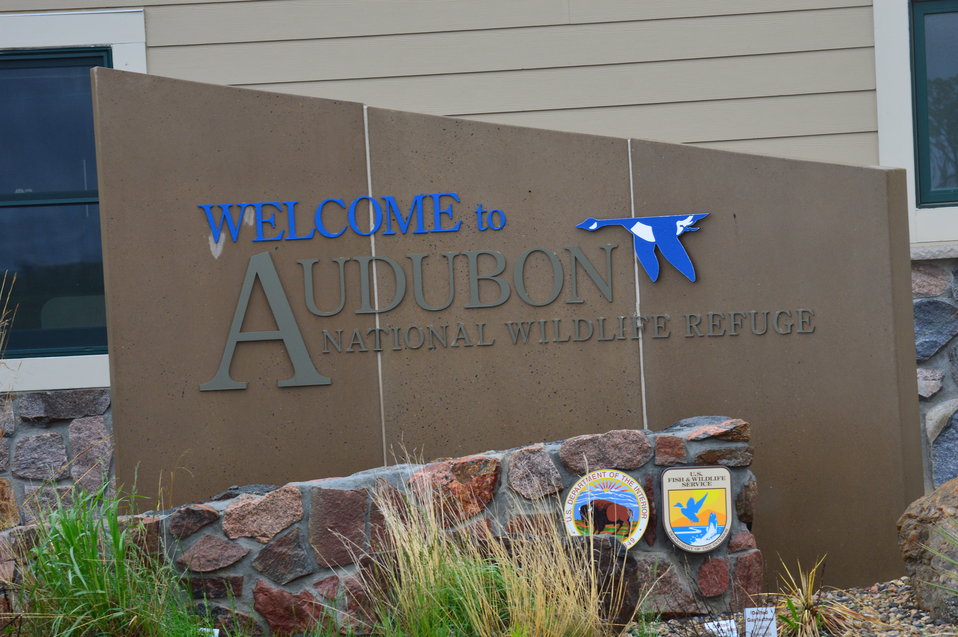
Welcome to Audubon sign